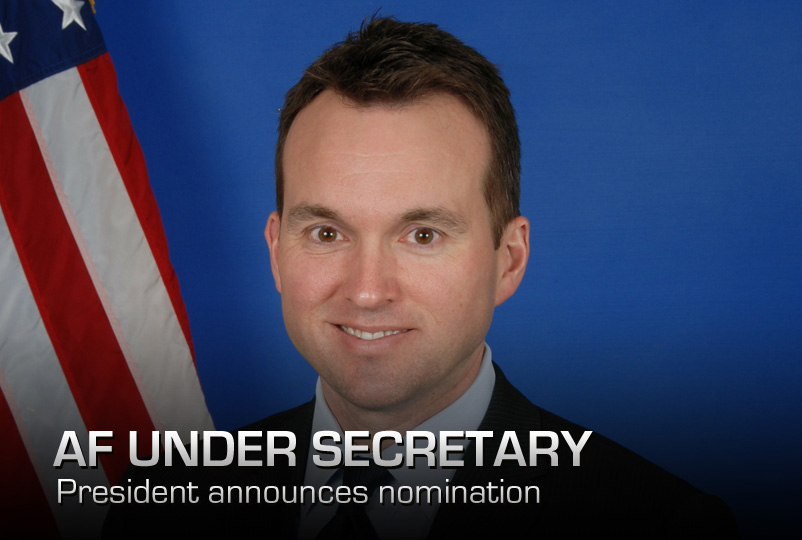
AF under secretary nominated

President Barack Obama announced Aug. 1 that he intends to nominate Eric Fanning, seen here in his official photograph, to be the next Under Secretary of the Air Force. Fanning is the Deputy Under Secretary and Deputy Chief Management Officer of the Department of the Navy, previously holding positions with the House Armed Services Committee, the White House, CBS News, the Commission on the Prevention of Weapons of Mass Destruction Proliferation and Terrorism, Business Executives for National Security, and the Office of the Secretary of Defense.